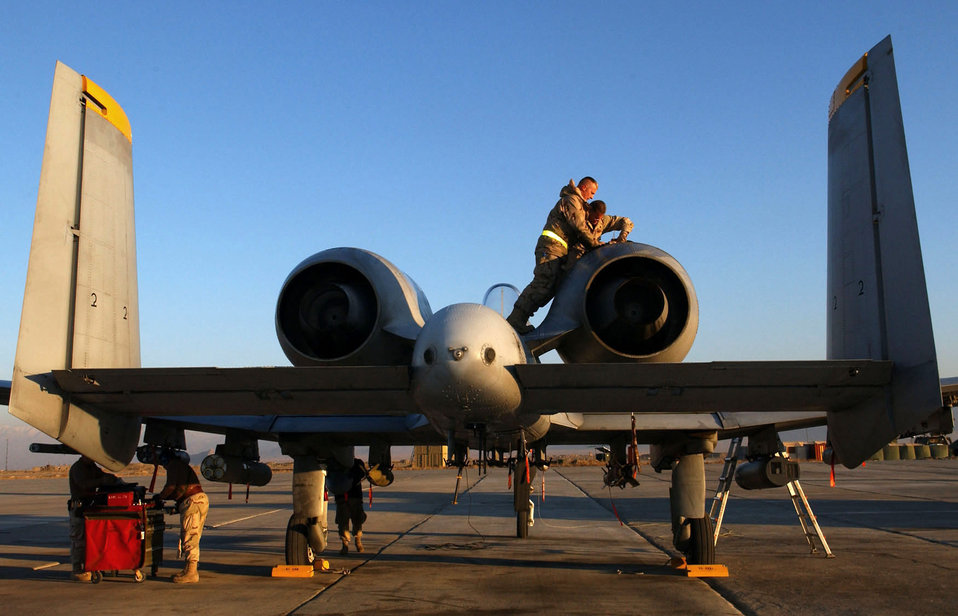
Crew chief for a day

BAGRAM AIR BASE, Afghanistan -- Staff Sgt. Franklin Newbery (left) teaches Col. Derrick Hoxie III how to take oil and fluid samples from an A-10 Thunderbolt II here Dec. 25. The colonel was participating in the 455th Expeditionary Maintenance Squadron's Crew Chief for a Day program. The program offers deployed Airmen of all Air Force specialties a chance to experience what it is like to work on fighter jets. "What better way is there to spend Christmas Day while on deployment than with the maintainers out on the flightline?" said Colonel Hoxie, the 455th Air Expeditionary Wing deputy commander. "I learned that we have a very professional team of maintainers out there, and the experience only reaffirmed what I have thought all along." Sergeant Newbery is a crew chief deployed from Spangdahlem Air Base, Germany, supporting Operation Enduring Freedom. Colonel Hoxie is deployed from the 552nd Air Control Wing at Tinker Air Force Base, Okla.